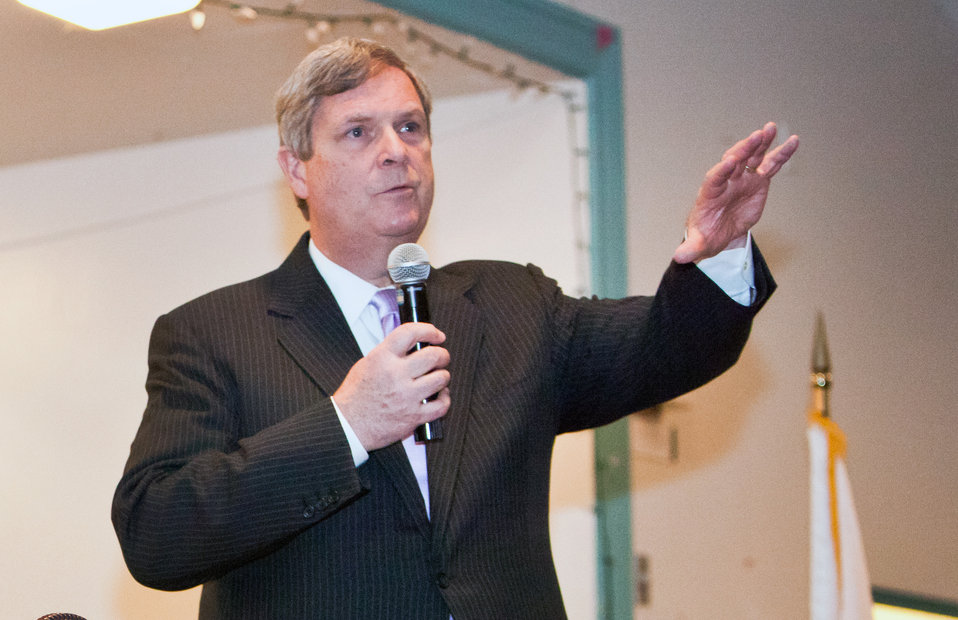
Agriculture Secretary Tom Vilsack speaks at a community roundtable in Weaverville, CA on Dec. 10, 2012.